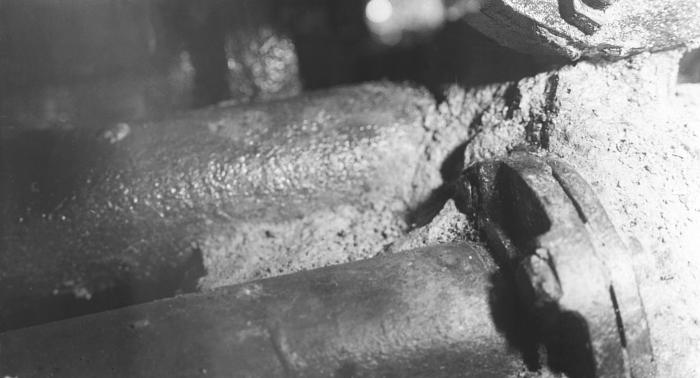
This historic photograph revealed a leaking water pipe where it had been determined that sewage had entered the Benson, Minnesota water supply. This was considered to be one of the causes of a typhoid fever epidemic in that city during August, 1914.